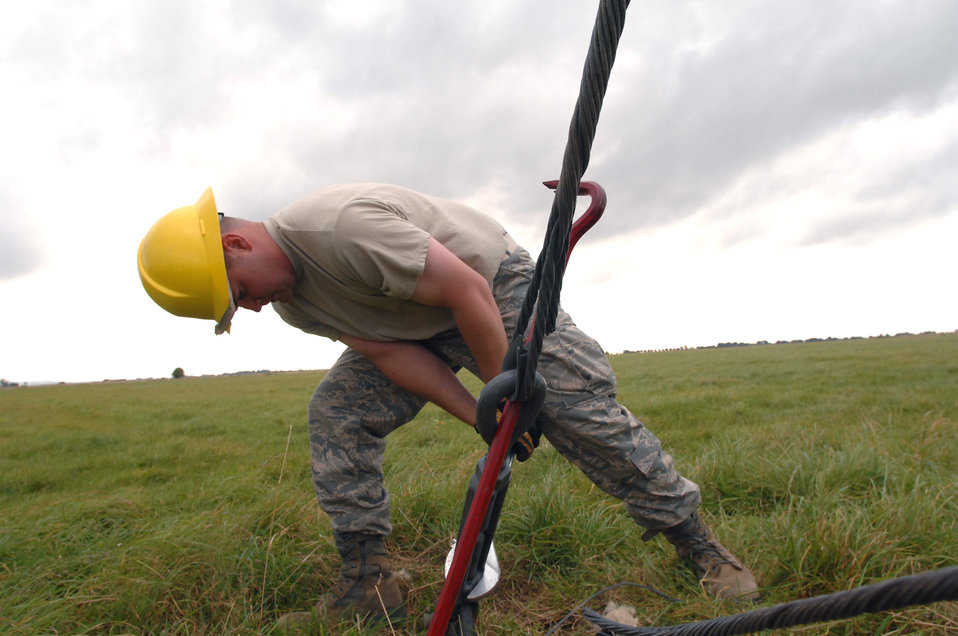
Airmen ensure communications capability for joint, coalition success

Staff Sgt. Scot Craig loosens a guy wire, which holds tension through tie-down points connected to a radio tower Sept. 18, 2009, at Royal Air Force Barford, England. Sergeant Craig is a member of the 1st Communications Maintenance Squadron cable and antenna theater maintenance team from Kapaun Air Station, Germany.